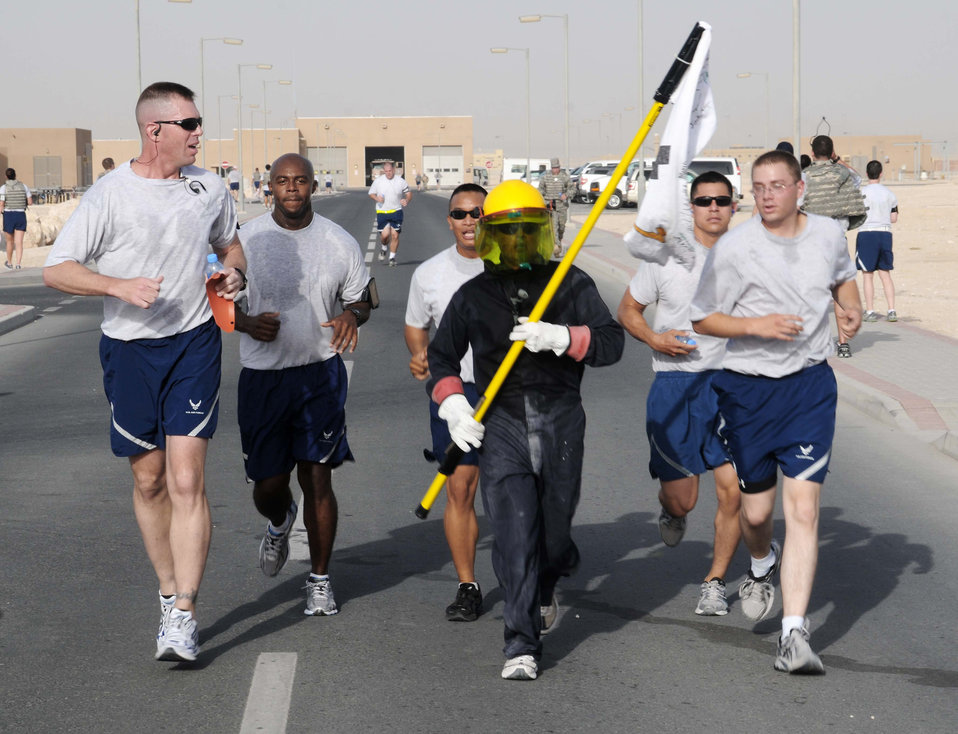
Airmen run to honor EOD fallen, injured

Airmen start the morning off with a 5 km run hosted by the 379th Expeditionary Civil Engineering Squadron Explosive Ordnance Disposal team May 7, 2011, at an airbase in Southwest Asia. Many service members came to participate or cheer on the runners.